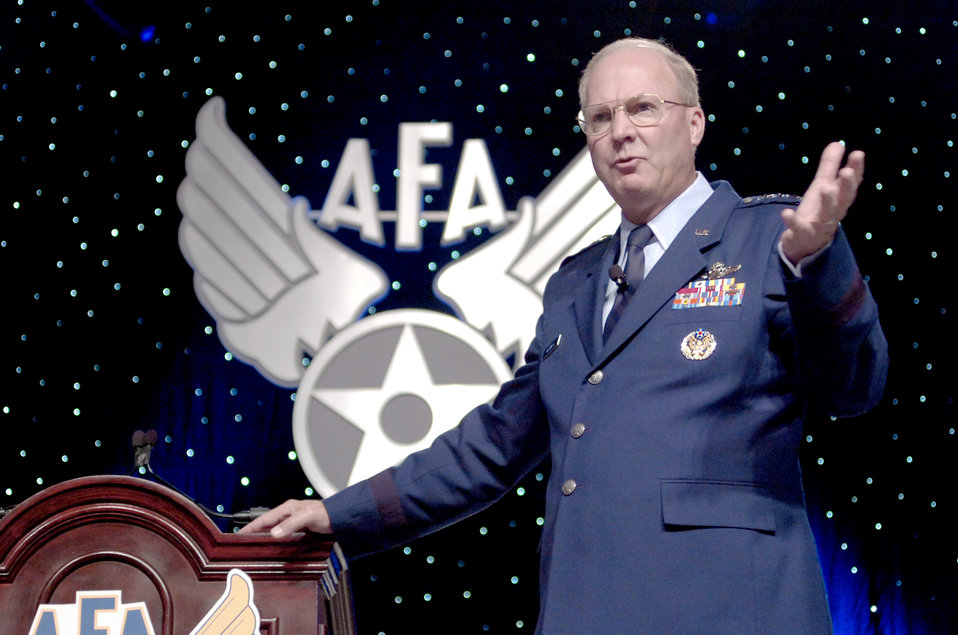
National Guard

Gen. Craig R. McKinley speaks to Air Force leaders Sept. 14, 2010, during the 2010 Air Force Association Air and Space Conference in Oxon Hill, Md. General McKinley is the chief of the National Guard Bureau.